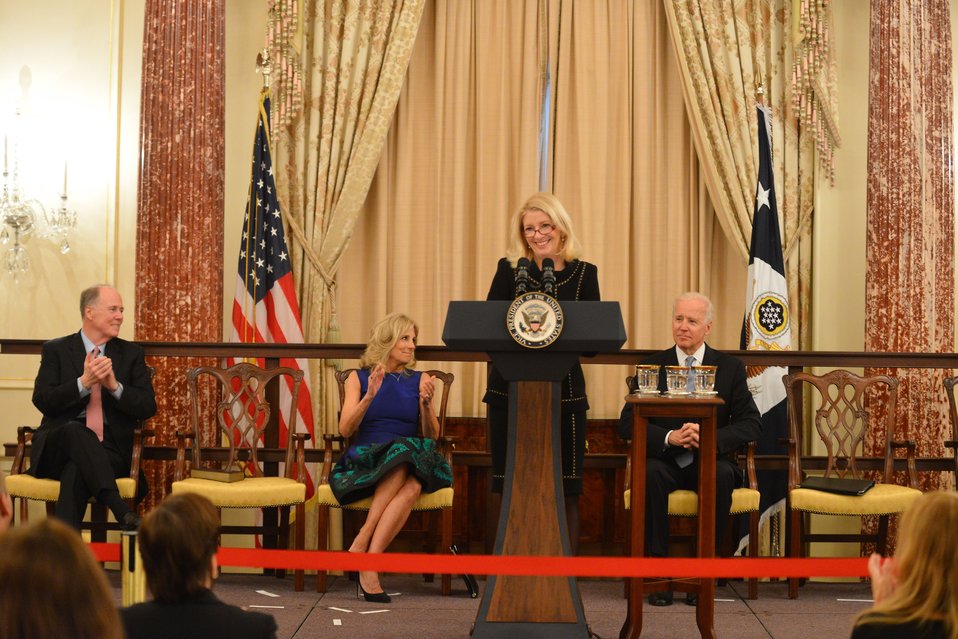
Ambassador Russell Delivers Remarks at her Swearing-In Ceremony

With her husband Tom Donilon, Dr. Jill Biden, and Vice President Biden looking on, U.S. Ambassador-at-Large for Global Women’s Issues Catherine Russell delivers remarks at her swearing-in ceremony at the U.S. Department of State in Washington, D.C., on January 17, 2014.